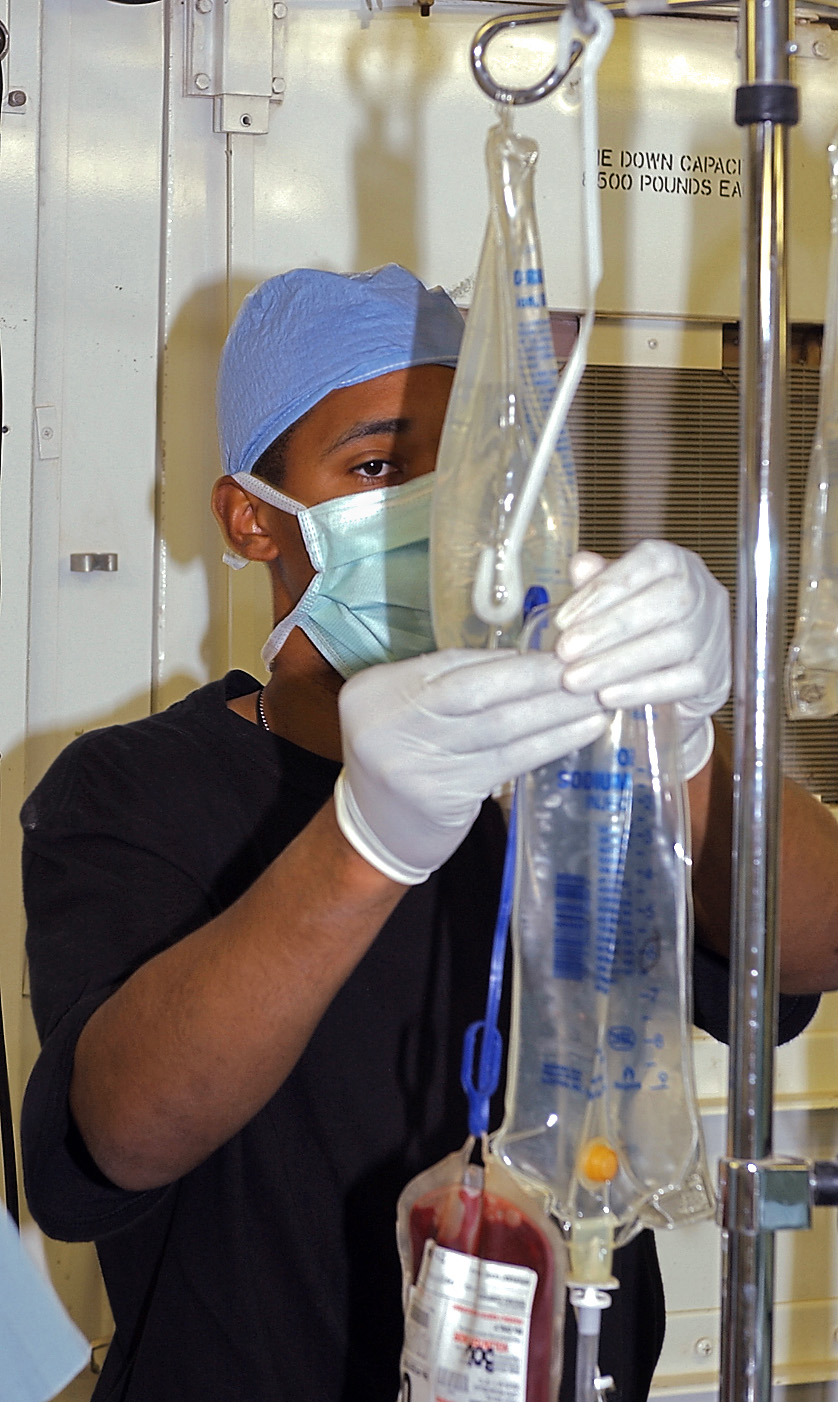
Saving lives, losing lives through eyes of medics

BAGHDAD, Iraq -- Staff Sgt. Charles Berry keeps blood and fluids flowing in the operating room as doctors treat a patient injured in an insurgent attack. The doctors, nurses and other medics with the 447th Expeditionary Medical Squadron here have treated more than 3,000 patients during the past five months. Sergeant Berry is deployed from Maxwell Air Force Base, Ala.